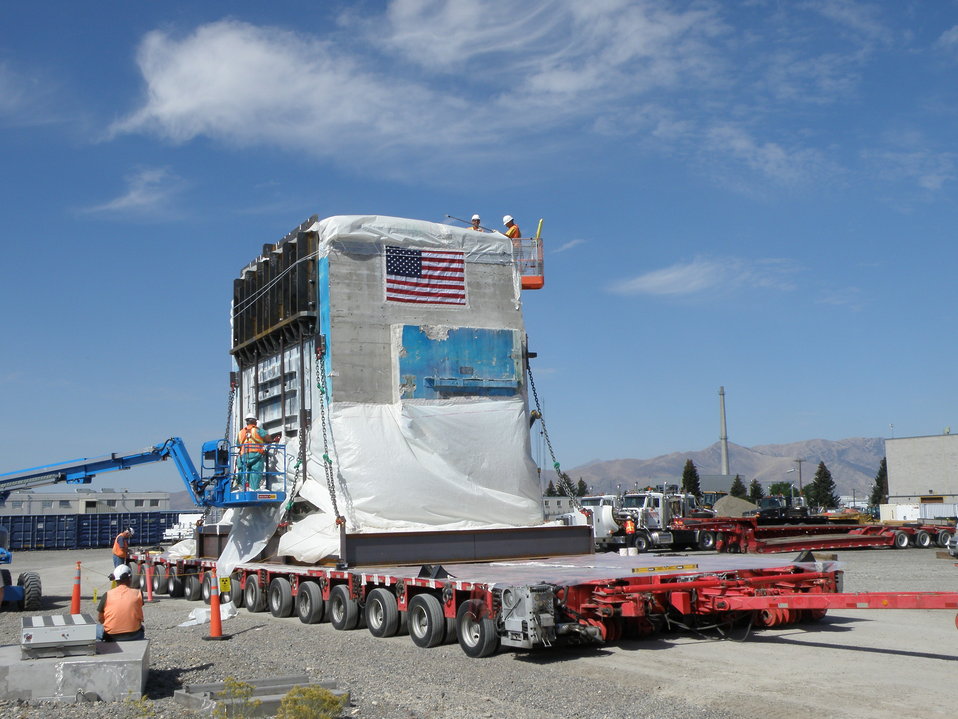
Materials Test Reactor hot cell

The Materials Test Reactor hot cell loaded and ready for transport. The hot cell was permanently disposed of onsite at the Idaho Site’s Idaho CERCLA Disposal Facility (ICDF). The D&D of the MTR and the hot cell was an ARRA funded project.